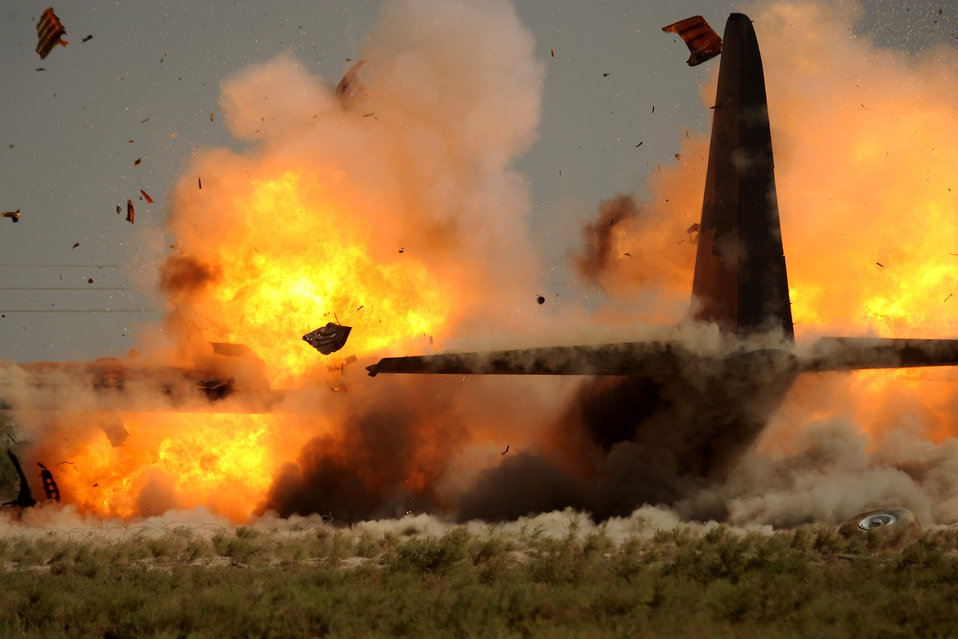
Iraqi freedom

An explosive ordnance disposal team from the 447th Air Expeditionary Group detonates explosives attached to the wings of a C-130 Hercules aircraft in Iraq July 7. The aircraft was disabled after it made an emergency landing last month, and the Airmen are using a series of controlled detonations to divide the aircraft into smaller pieces so it can be moved.